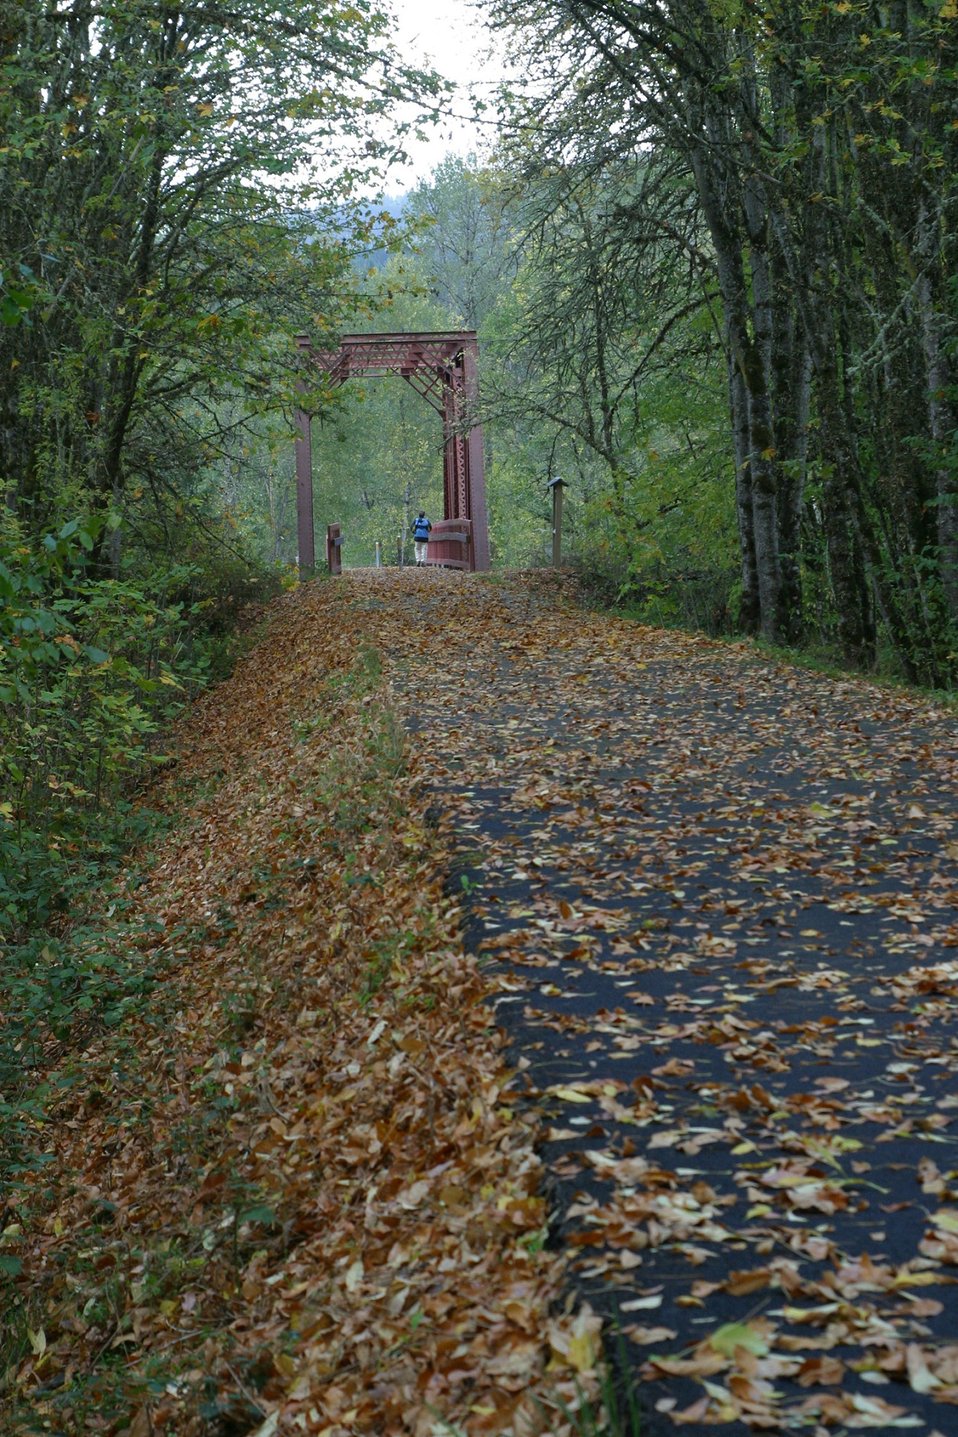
The the 15.6 mile Row River Trail trail not only attracts mountain bicyclists and horseback riders, but also road bicyclists and even a few in-line skaters.